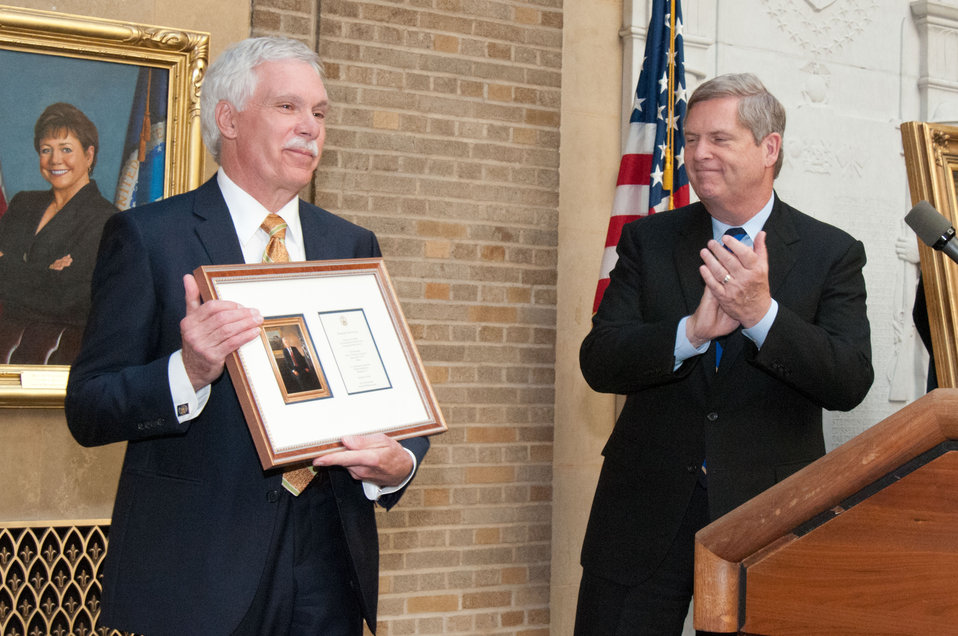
Agriculture Secretary Tom Vilsack presents Former Agriculture Secretary Ed Schafer with a framed invitation and copy of his portrait during the unveiling of Secretary Schafer’s portrait at the United States Department of Agriculture in Washington, D.C,, on Friday, April 27, 2012.